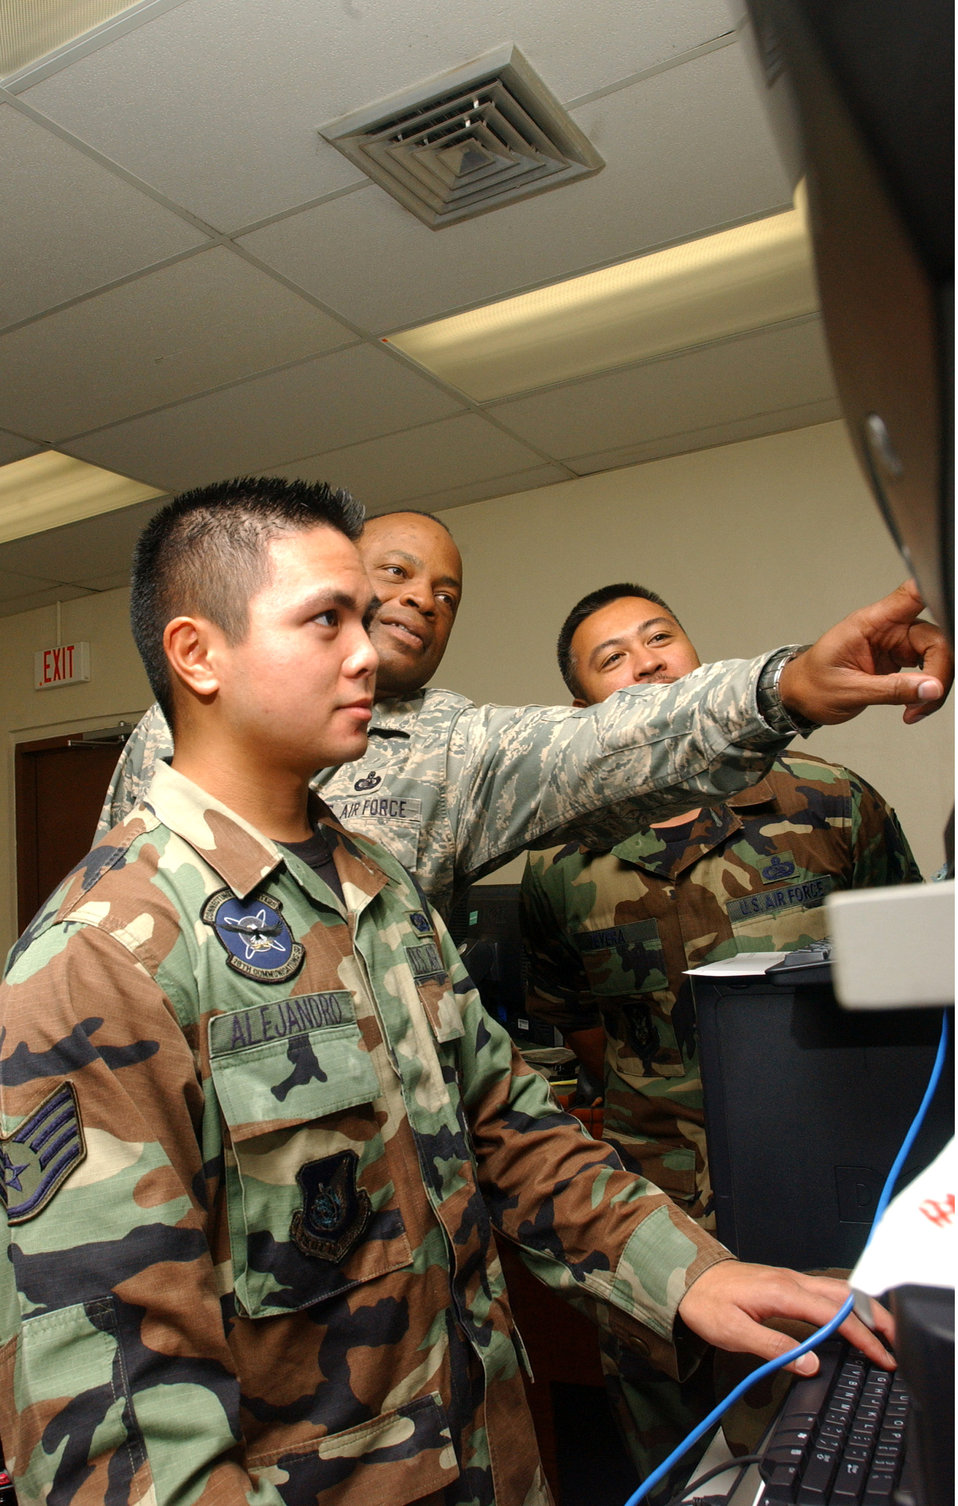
Cyber Airmen fight in America's newest battlefront

Master Sgt. Rickey Bryant (center), Senior Master Sgt. Vincent DeVera (right) and Staff Sgt Matthew Alejandro troubleshoot a component of the Andersen Air Force Base, Guam communications network.